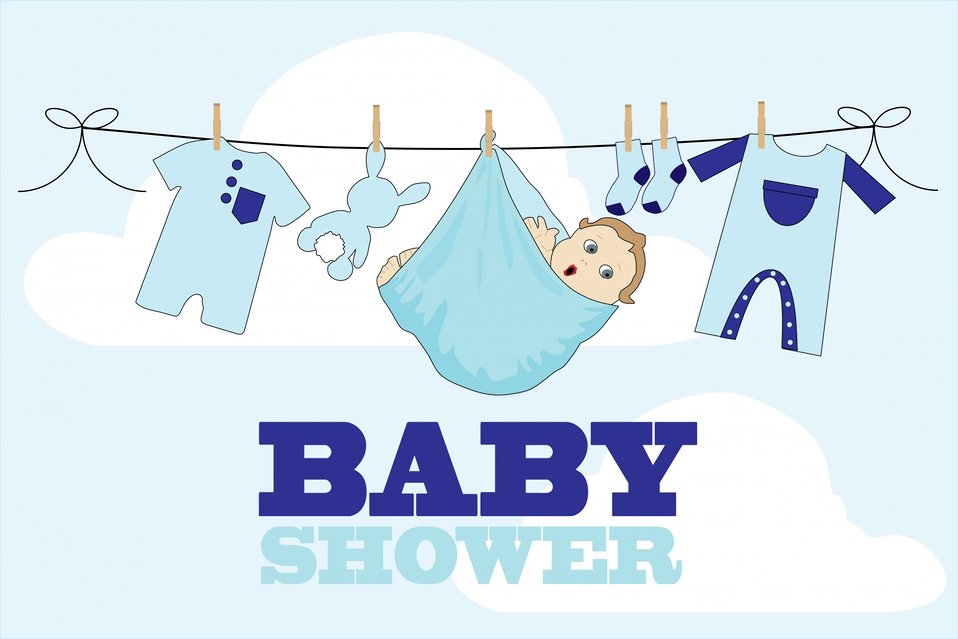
Baby shower card boy

Cute baby boy on clothes washing line baby shower card template.